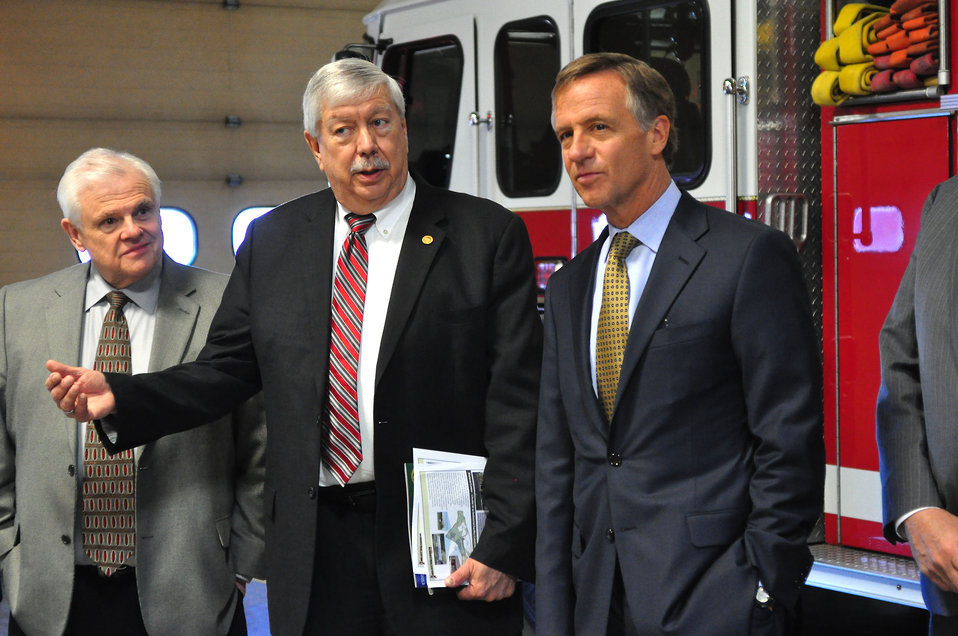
Gov. Bill Haslam Visit to ETTP 2014 Oak Ridge

14-037 DOE photo Lynn Freeny 3-21-2014 Oak Ridge Tennessee